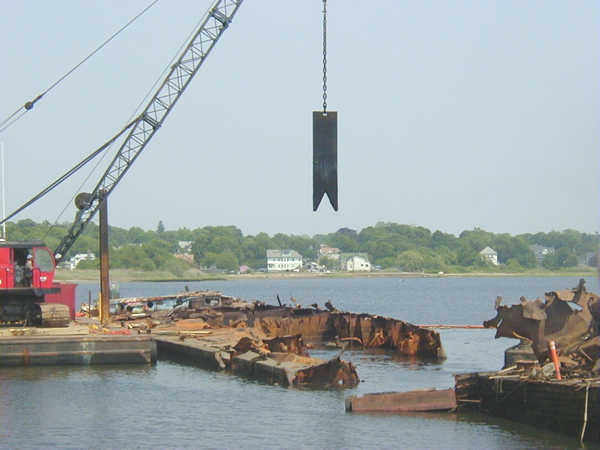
Spring 2002, demolishing an abandoned barge